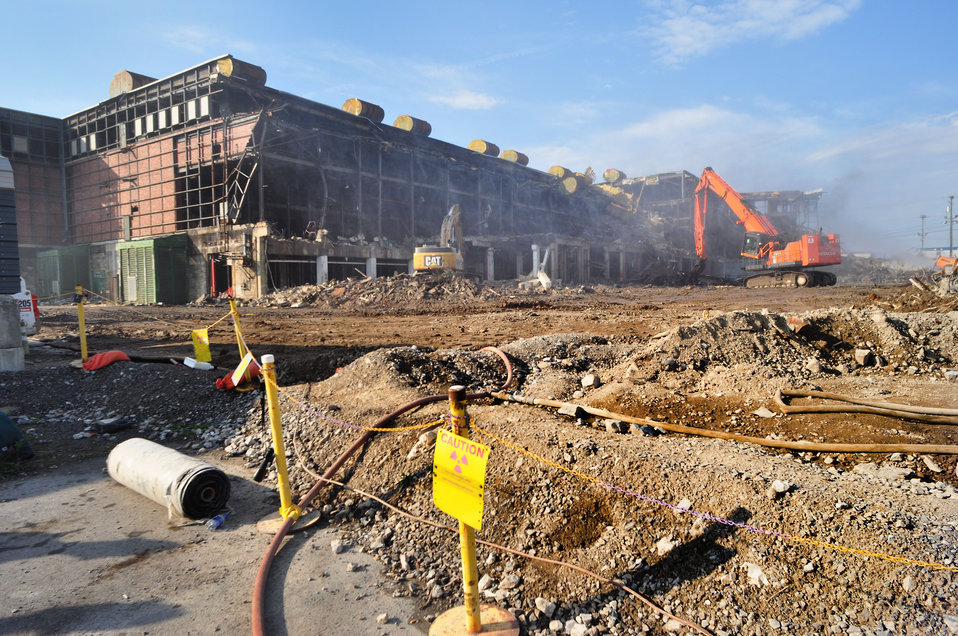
D and D Clean Up Work at K-25 Oak Ridge 2013

13-124-75 DOE photo Lynn Freeny 10-30-2013 Oak Ridge Tennessee